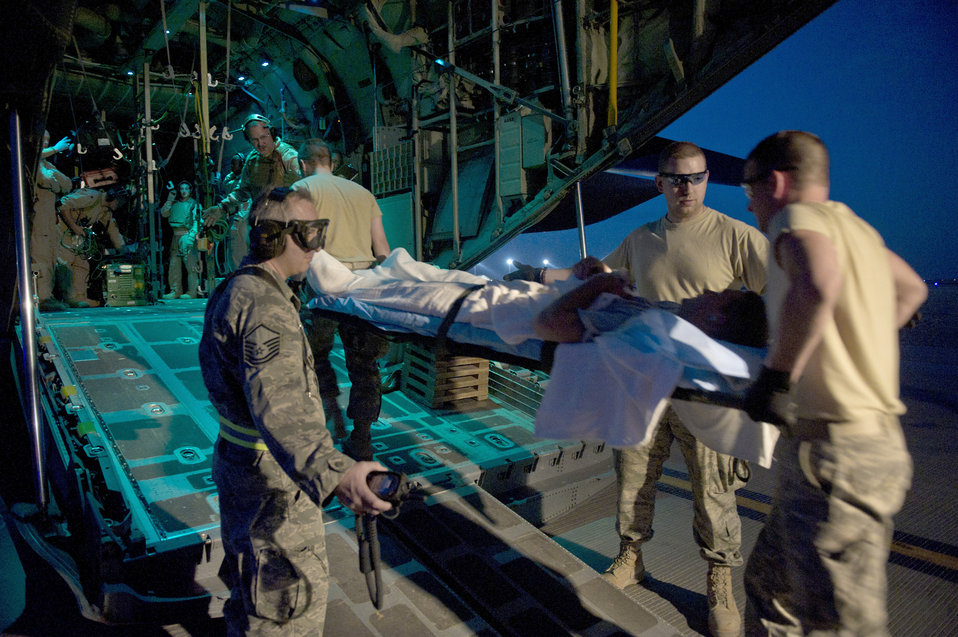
Transporting the wounded

Members of the 451st Expeditionary Aeromedical Evacuation Squadron load a wounded Marine onto a C-130 Hercules May 21, 2011, at Camp Bastion, Afghanistan.